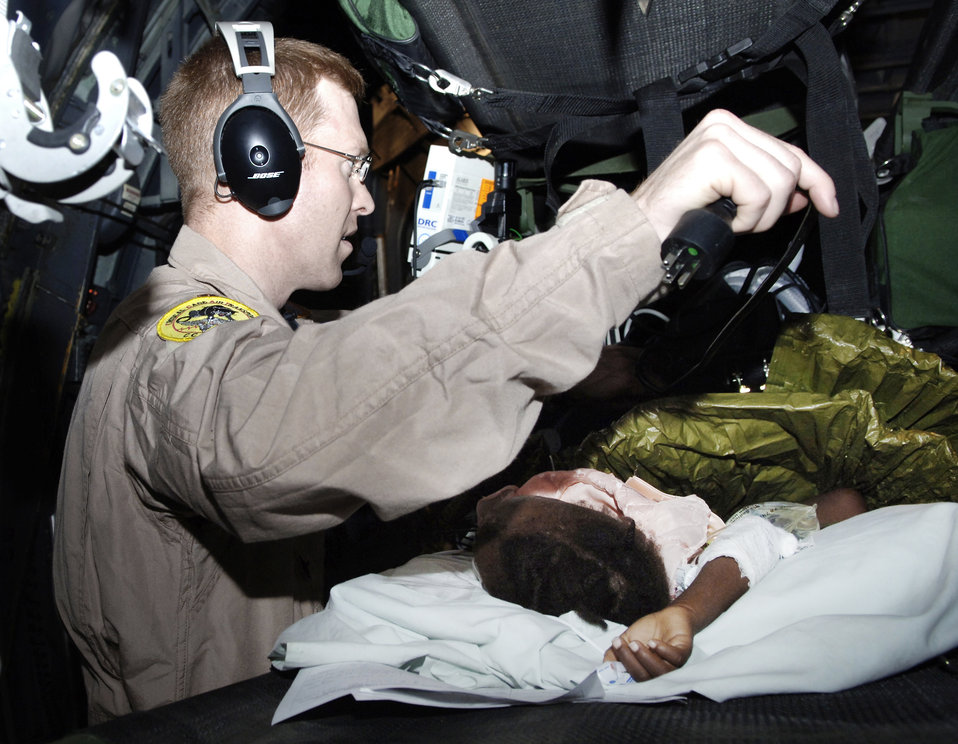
CCATT

Maj. John Lynch, a physician and critical care air transport team member, prepares a 3-year-old earthquake victim for aeromedical evacuation from Port-au-Prince, Haiti, to Fort Lauderdale, Fla., Jan. 24, 2010. Major Lynch is with the 88th Medical Group from Wright-Patterson Air Force Base, Ohio.